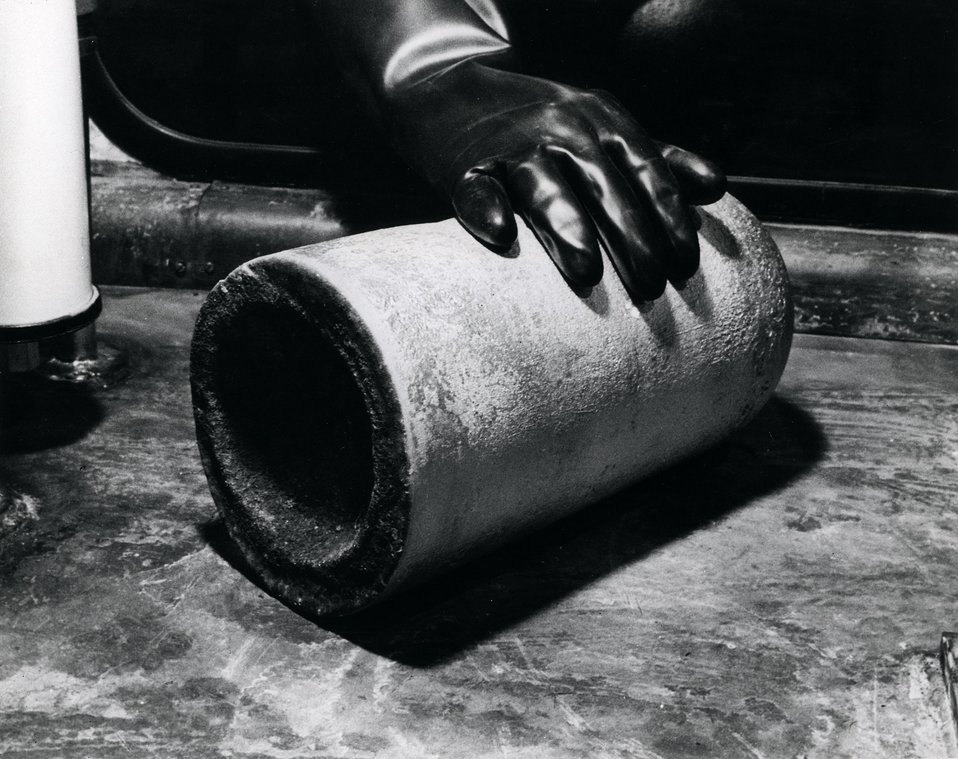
A zinc-stainless steel ingot cast in the liquid metal fuel decladding process.